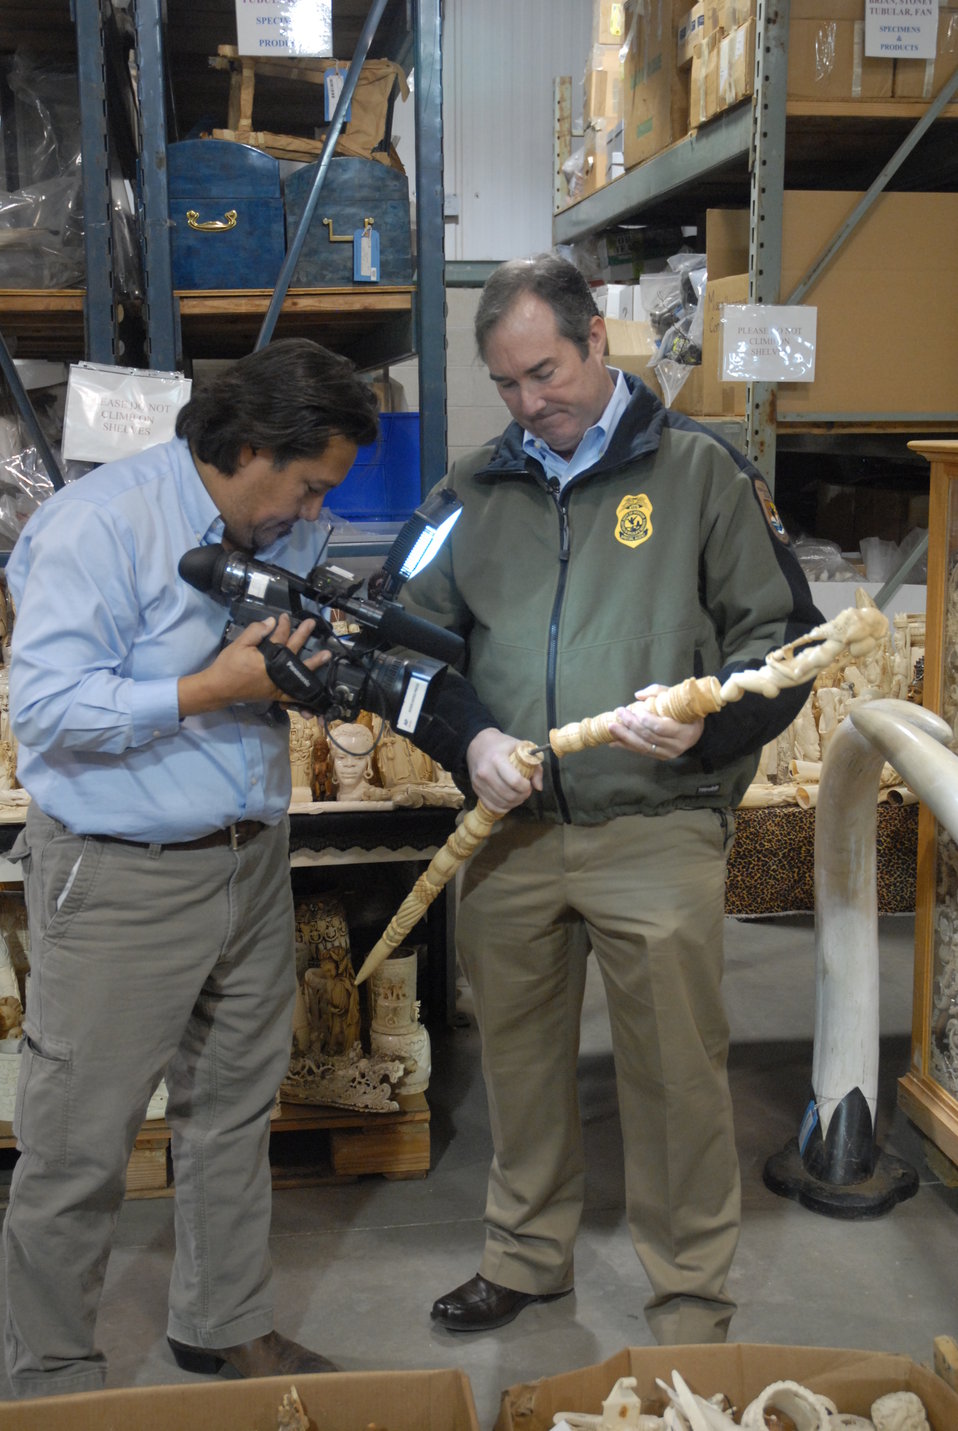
Edward Grace, USFWS Deputy Assistant Director for Law Enforcement discussing the ivory.